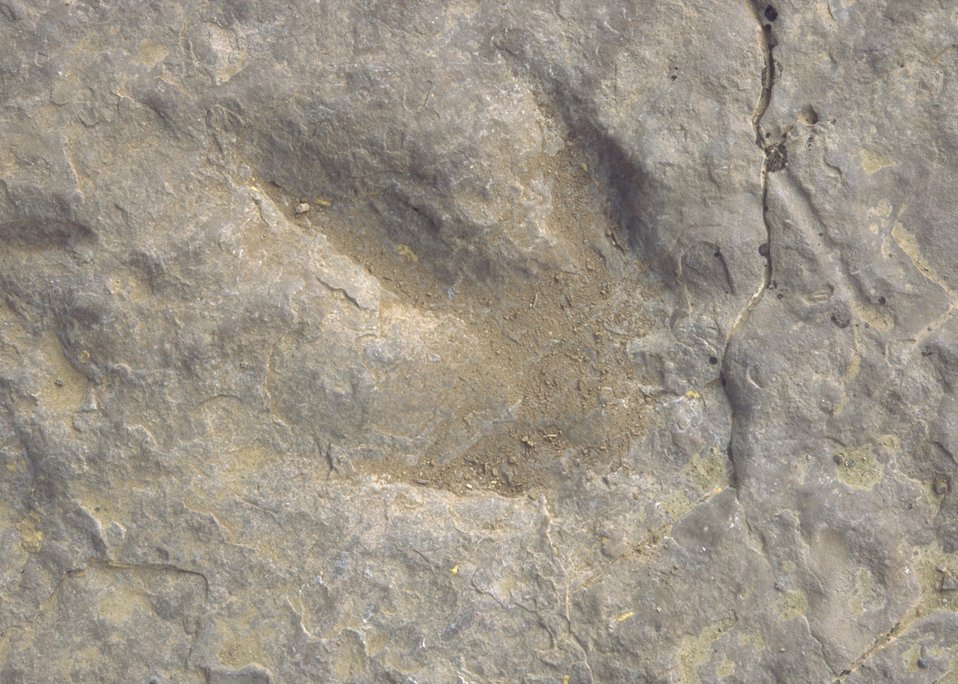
Detail of dinosaur track at the Red Gulch Dinosaur Tracksite, Worland Field Office.